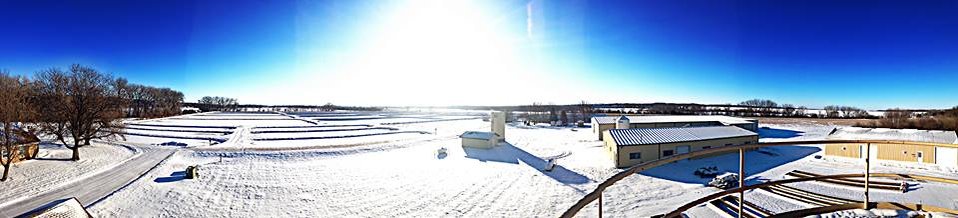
Winter Pano

December 21 was the first official day of winter. Can you see the -20 windchill in the air?